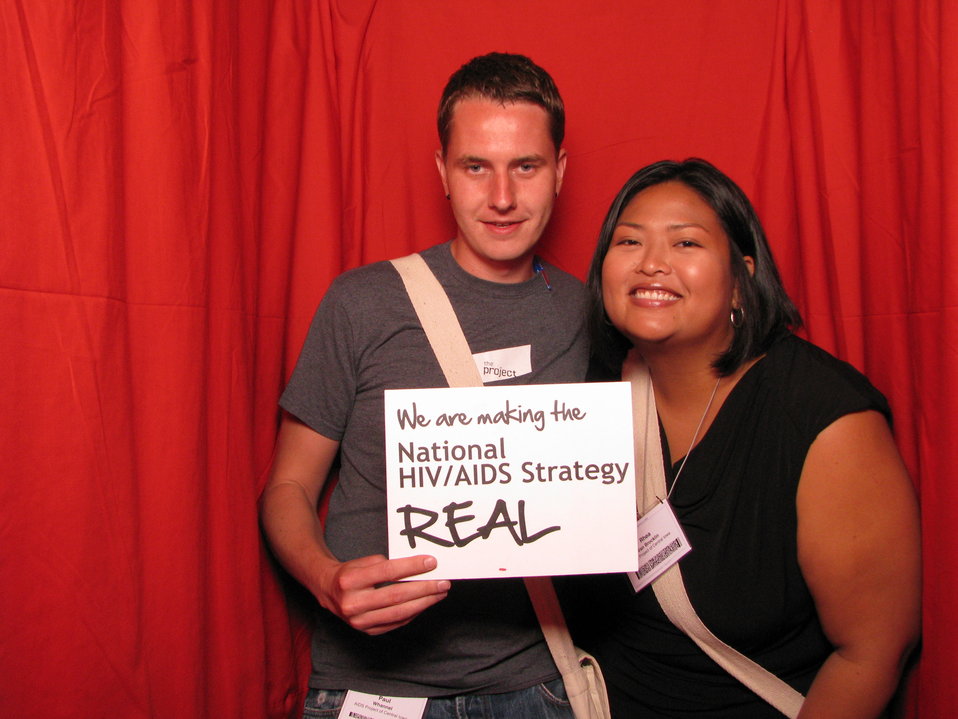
We are making the National HIV/AIDS Strategy REAL

From the AIDS.gov photo booth at the U.S. Conference on AIDS, September 2010 (Orlando, FL).